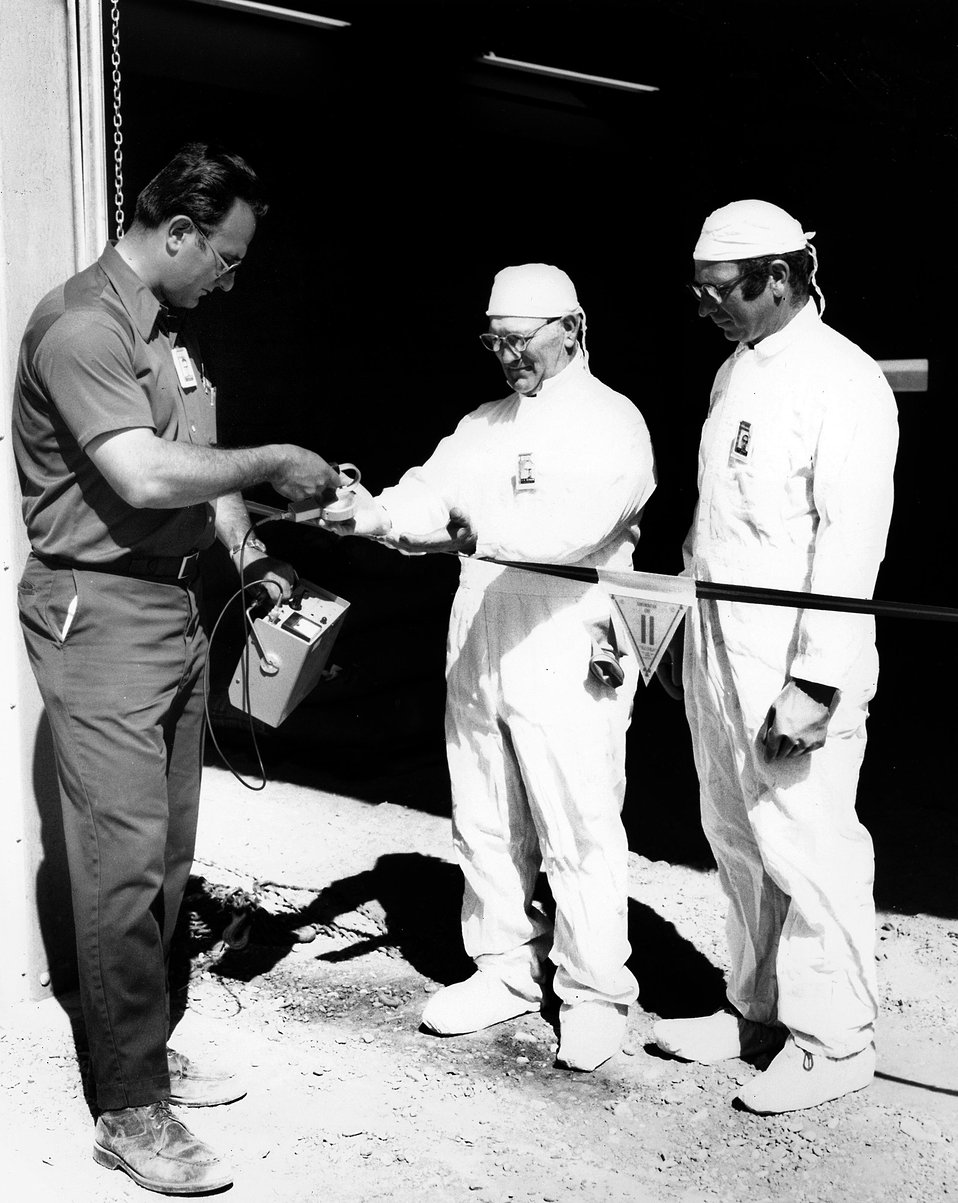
A health physicist monitors two workers before they leave an area having potential radiation contamination.